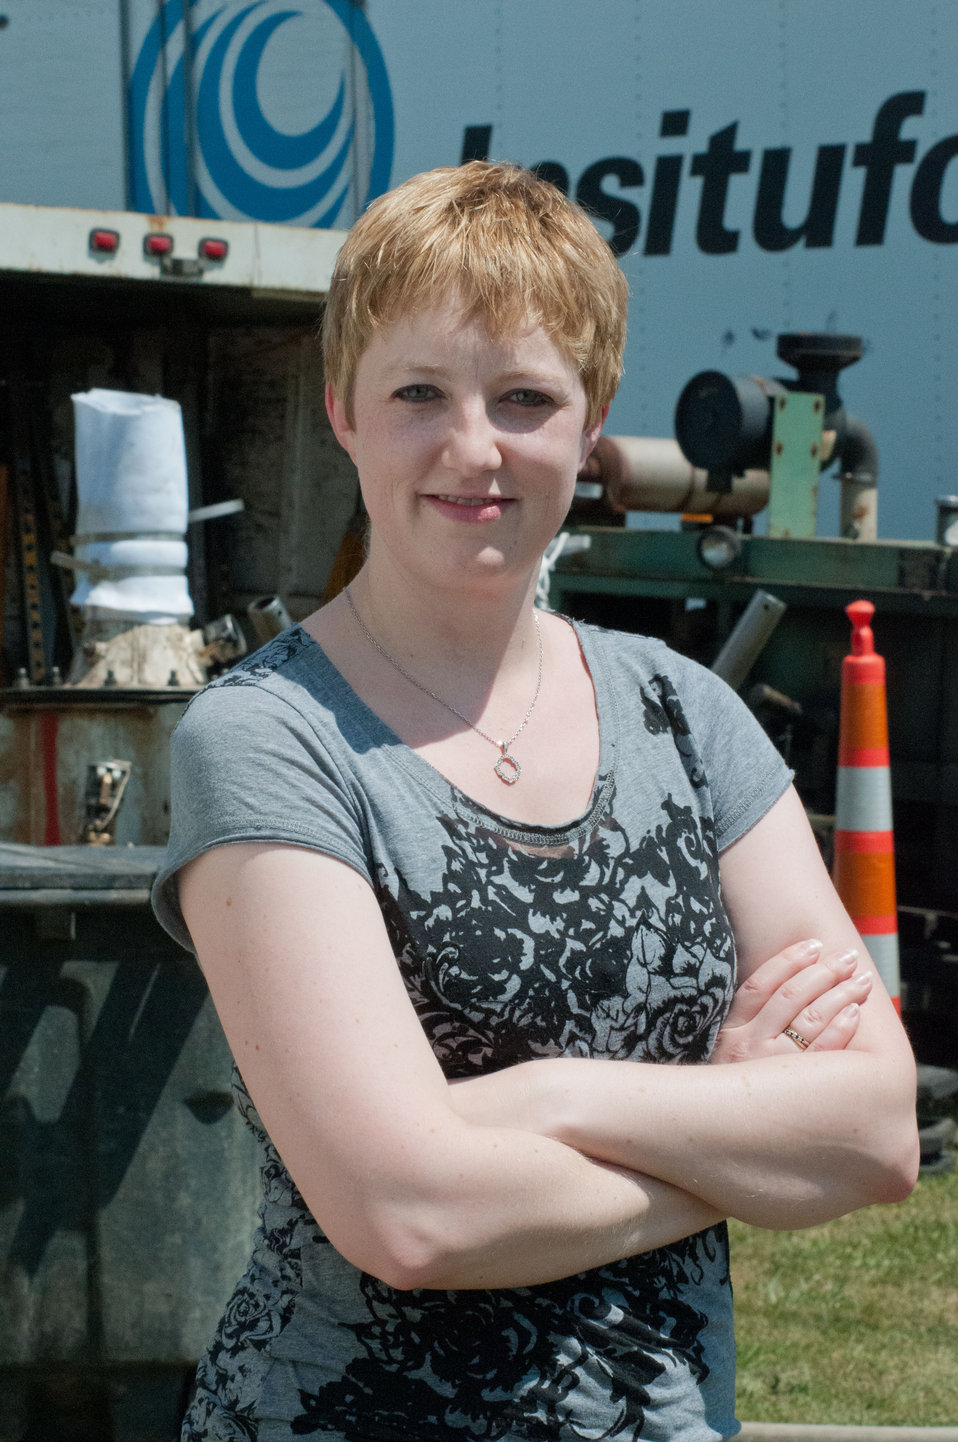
Wade Trim Inc. Professional Engineer Tiffany Harrison said on Tuesday, July 19, 2011, about applying for the working with the United States Department of Agriculture’s (USDA) Rural Development grant for Buena Vista Township Phase II Sewer Project in Michigan, “It was very easy, they make it very straight forward, in what paperwork they need. They were always available for questions.'
Buena Vista Township Phase II Sewer Project is the refurbishment and rehabilitation of 45,500 linear feet of defective sewer pipe and more than 200 manholes; the construction of an off-site excess flow basin; construction of a pump station; and improvements at the wastewater treatment plant. The system will serve 2,349 residential and 177 commercial customers and will bring the township into compliance with environmental regulations regarding pollutant discharges.
Inspections revealed that the 1960s sanitary sewer system had inflow from storm and rainwater systems and overflowed into the sanitary sewer system. Infiltration was found in the form of cracks, and other failures that allowed groundwater to enter. Rather than digging up the old system, rehabilitation with a cured-in-place-pipe (CIPP) method was chosen. This provides up to a 50% savings and the liner is projected to last 50-100 years. CIPP repair of the 8-30” diameter pipes involves pulling a resin-saturated fabric liner through a damaged pipe, which is then cured with steam or hot water to form a tight-fitting, joint less replacement pipe. Trenchless repair methods require less digging than traditional “dig and replace” repair methods and minimize damage to yards and landscaping. There are two of these teams and one manhole rehabilitation to seal the underground casting frame or brick structure. They process 600-800 feet per day.
USDA Rural Development has funded water and sewer projects in 117 Michigan communities serving more than 94,000 customers.
Senior Advisor to the Secretary of Agriculture Doug O’Brien said, “America will win the future by out-building, out-educating and out-innovating the world,” O'Brien said. “The Obama Administration is committed to the residents and business owners of Buena Vista Township in building the infrastructure needed to protect our environment and ensure clean water for future generations.” Being almost entirely surrounded by the Great Lakes, Michigan residents know that a small problem upstream usually leads to much bigger problems downstream and that the impact of water pollution extends far beyond the immediate community.